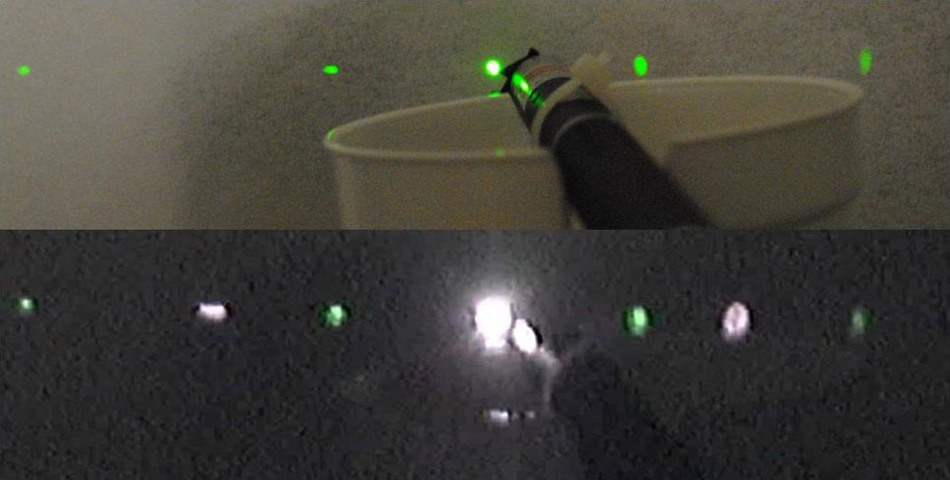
Lasers; Optics

IR leakage: (Top) Photo from an ordinary camera shows light from a green laser diffracted into several spots. The green laser pointer is visible in the foreground. (Bottom) The same vignette photographed by a webcam with no infrared-blocking filter reveals intense diffraction spots from 808nm infrared light, invisible to the eye.